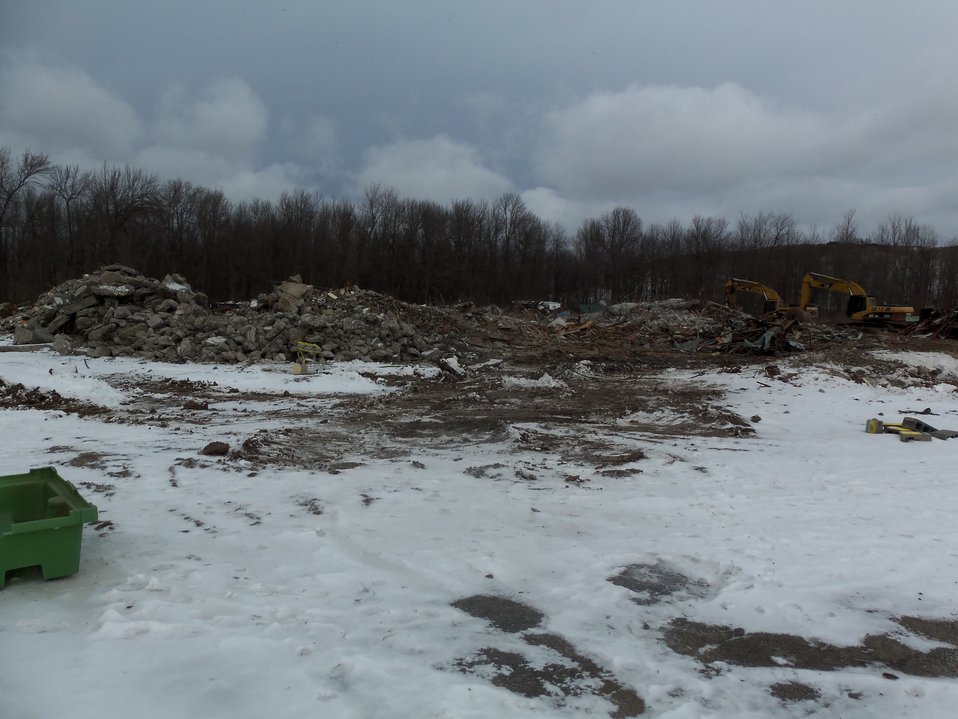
BLDG 401 CONCRETE DEBRIS.

Activities from the Niagara Falls Storage Site, which is associated with the former Lake Ontario Ordnance Works. Formerly Utilized Sites Remedial Action Program (FUSRAP), a program initiated in 1974 to identify, investigate and clean up or control sites that were part of the Nation's early atomic energy and weapons program. Activities at the sites that are eligible for FUSRAP were conducted by Manhattan Engineer District (MED) or the Atomic Energy Commission (AEC), both predecessors of the Department of Energy (DOE). The U.S. Army Corps of Engineers was assigned management of FUSRAP by Congress in 1997.